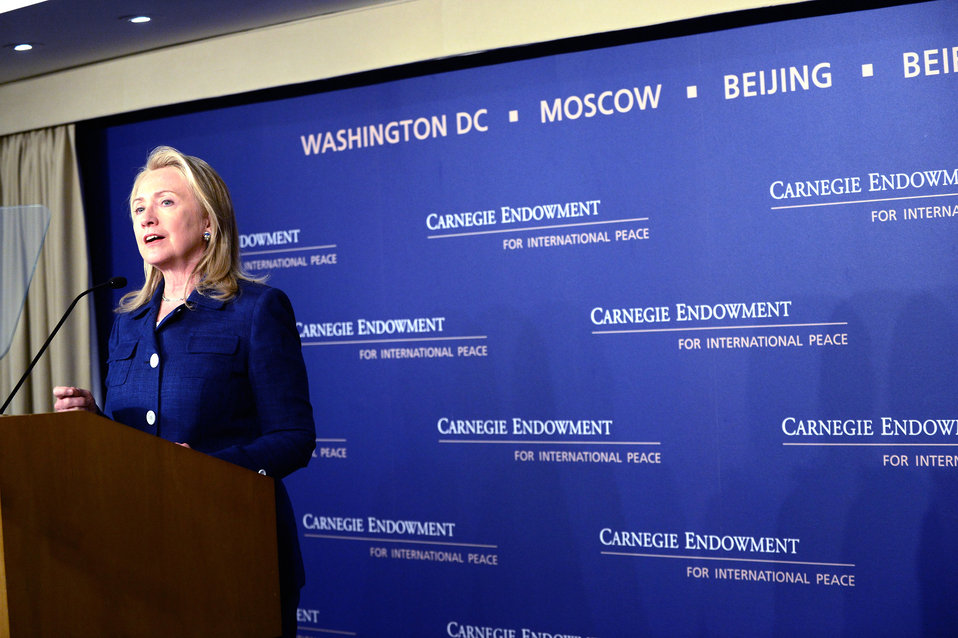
Secretary Clinton Delivers Remarks on International Religious Freedom

U.S. Secretary of State Hillary Rodham Clinton delivers remarks on the release of the International Religious Freedom Report at the Carnegie Endowment for International Peace in Washington, D.C., on July 30, 2012. [State Department/ Public Domain]